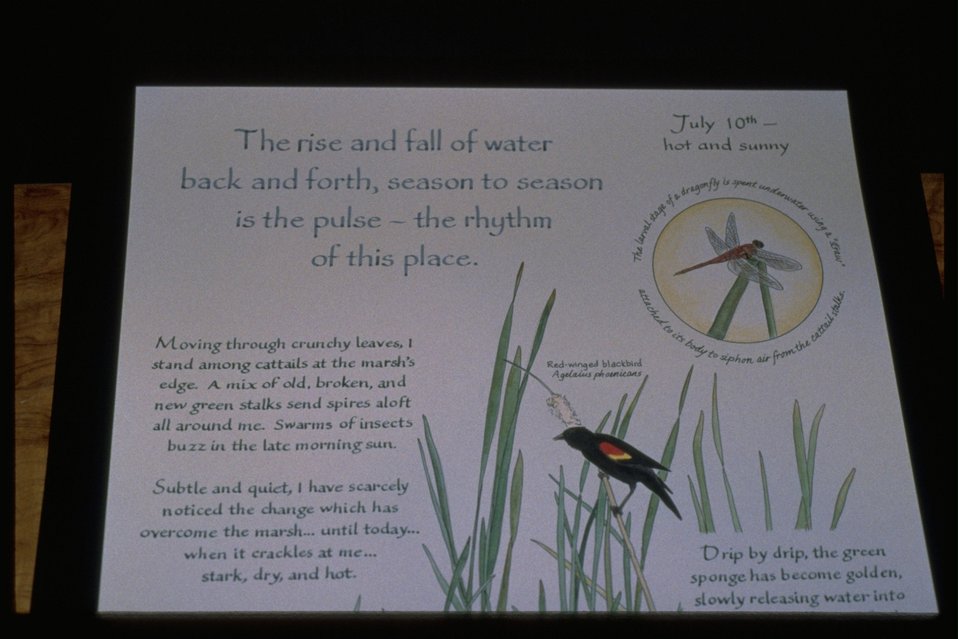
Interpretive Panels: Boardwalk Trail Journals.